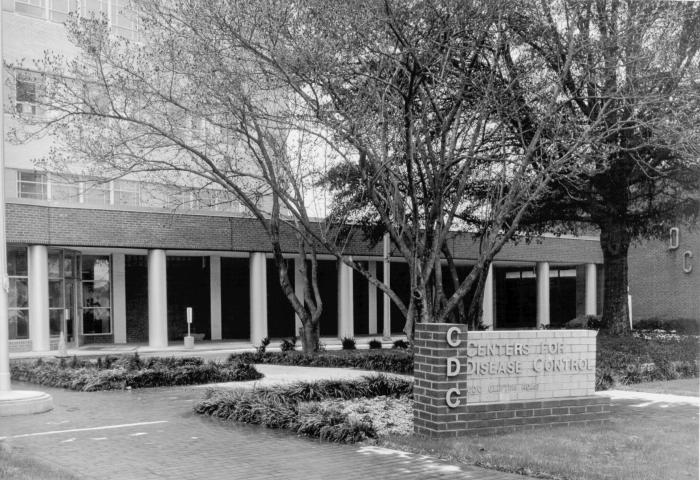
This was an earlier image of the front of the Center for Disease Control and Prevention, CDC Building 1, Atlanta, Georgia.